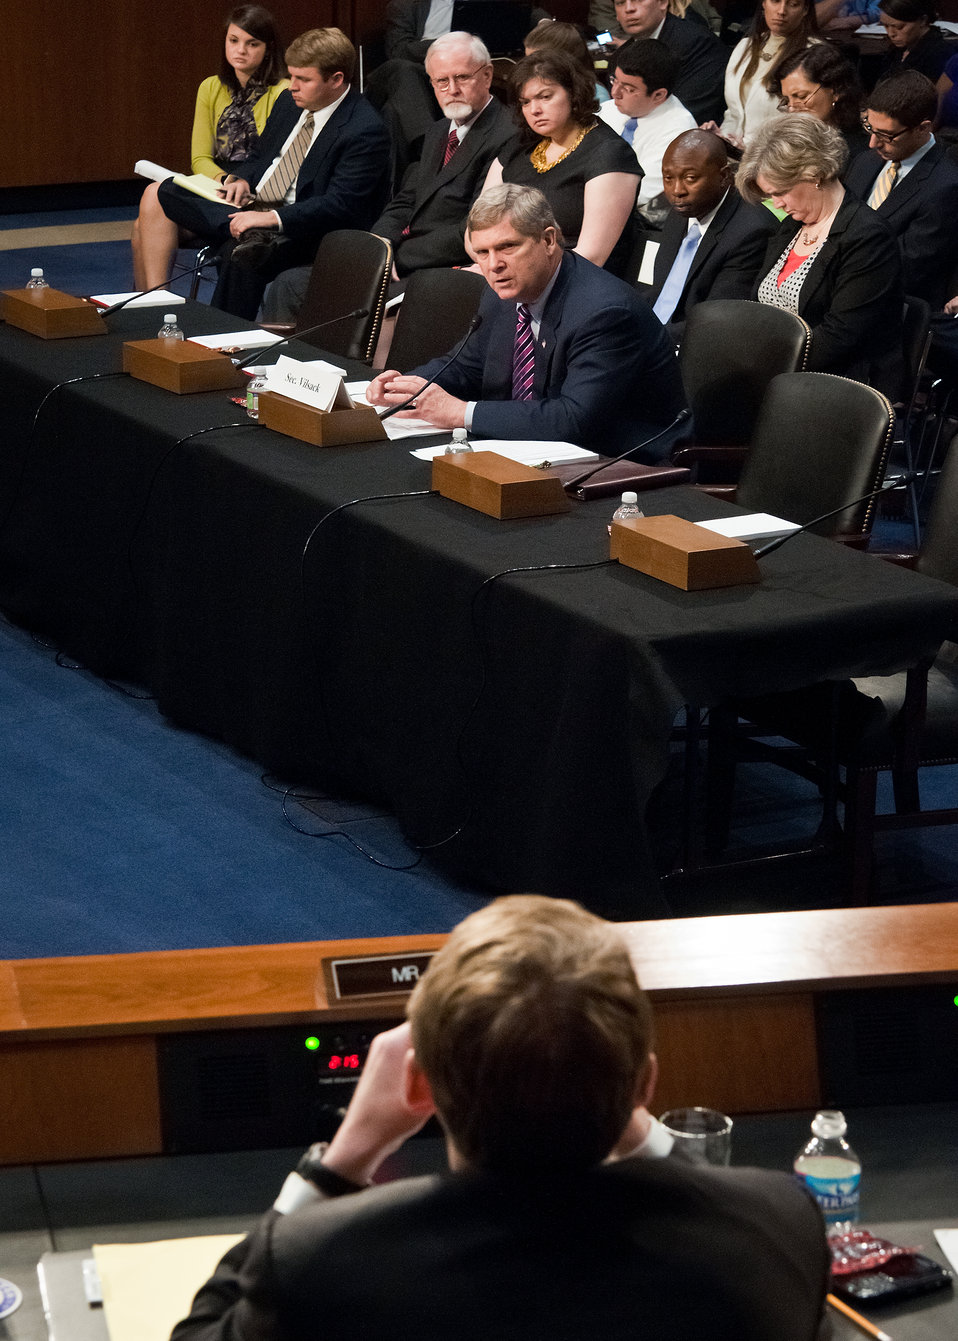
Agriculture Secretary Tom Vilsack answers questions posed by Senator Michael Bennet, CO, during a Senate Committee on Agriculture, Nutrition and Forestry on the next Farm Bill in Washington, DC, Thursday, May 26, 2011.